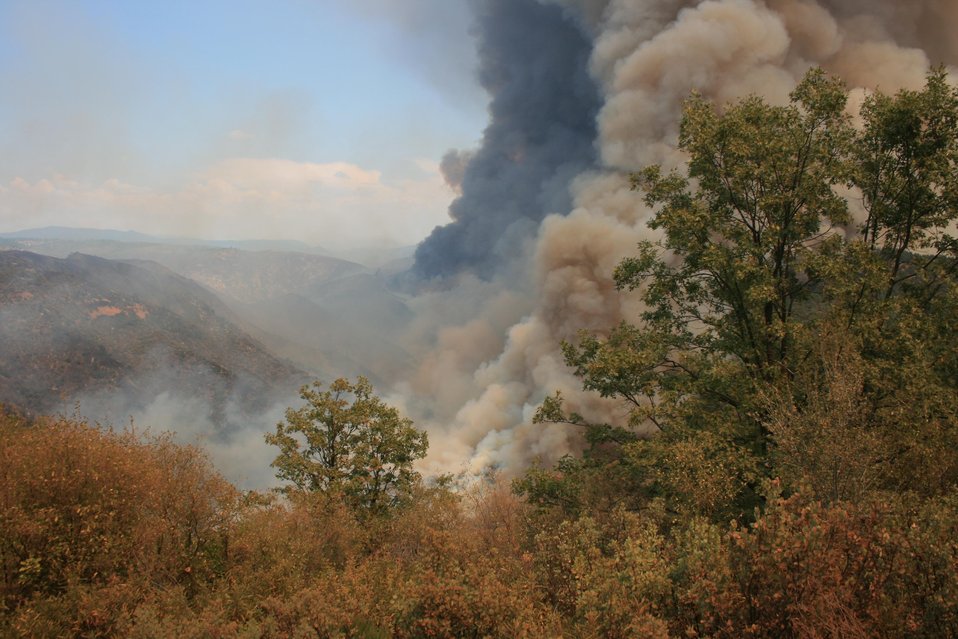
The Rim Fire in the Stanislaus National Forest near in California began on Aug. 17, 2013 and is under investigation. The fire has consumed approximately 149, 780 acres and is 15% contained.